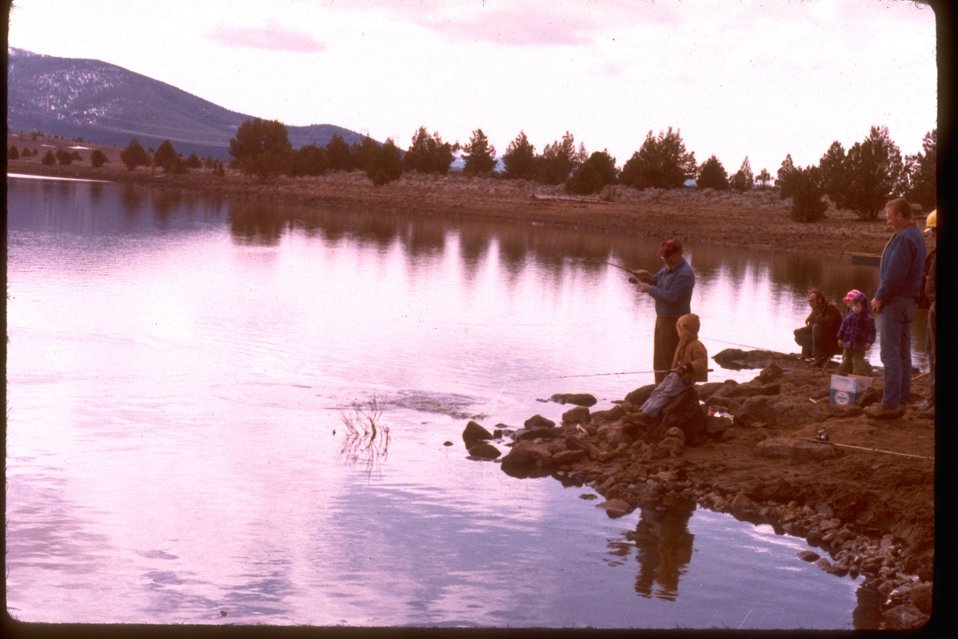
Fishing at Duncan Reservoir.